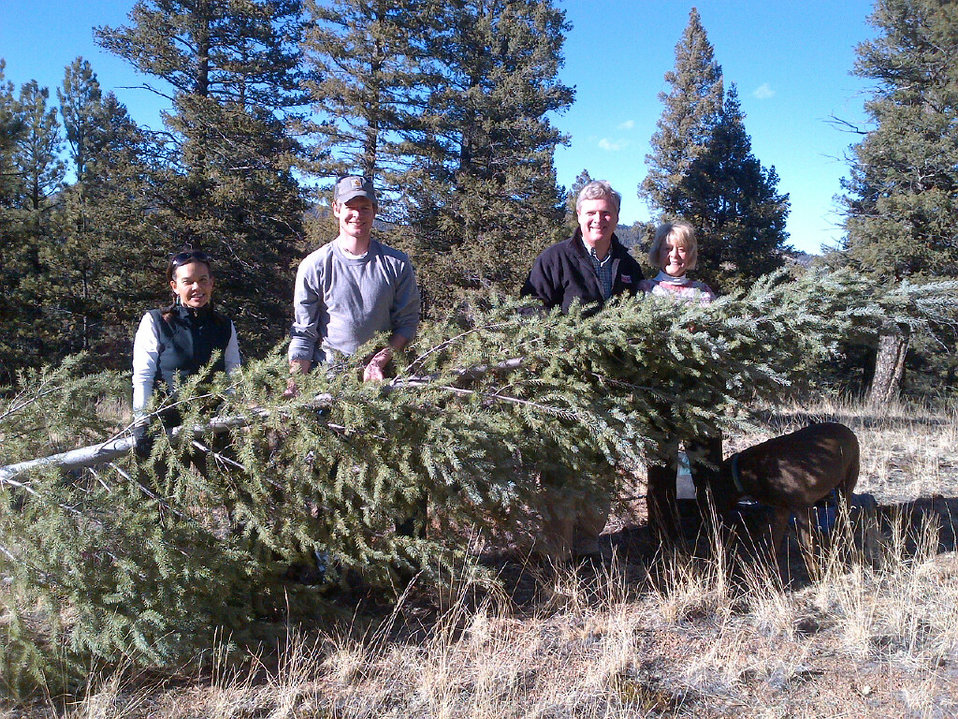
Agriculture Secretary Tom Vilsack (second from right) and his family were recently at Pike National Forest in Colorado to select their Christmas tree.